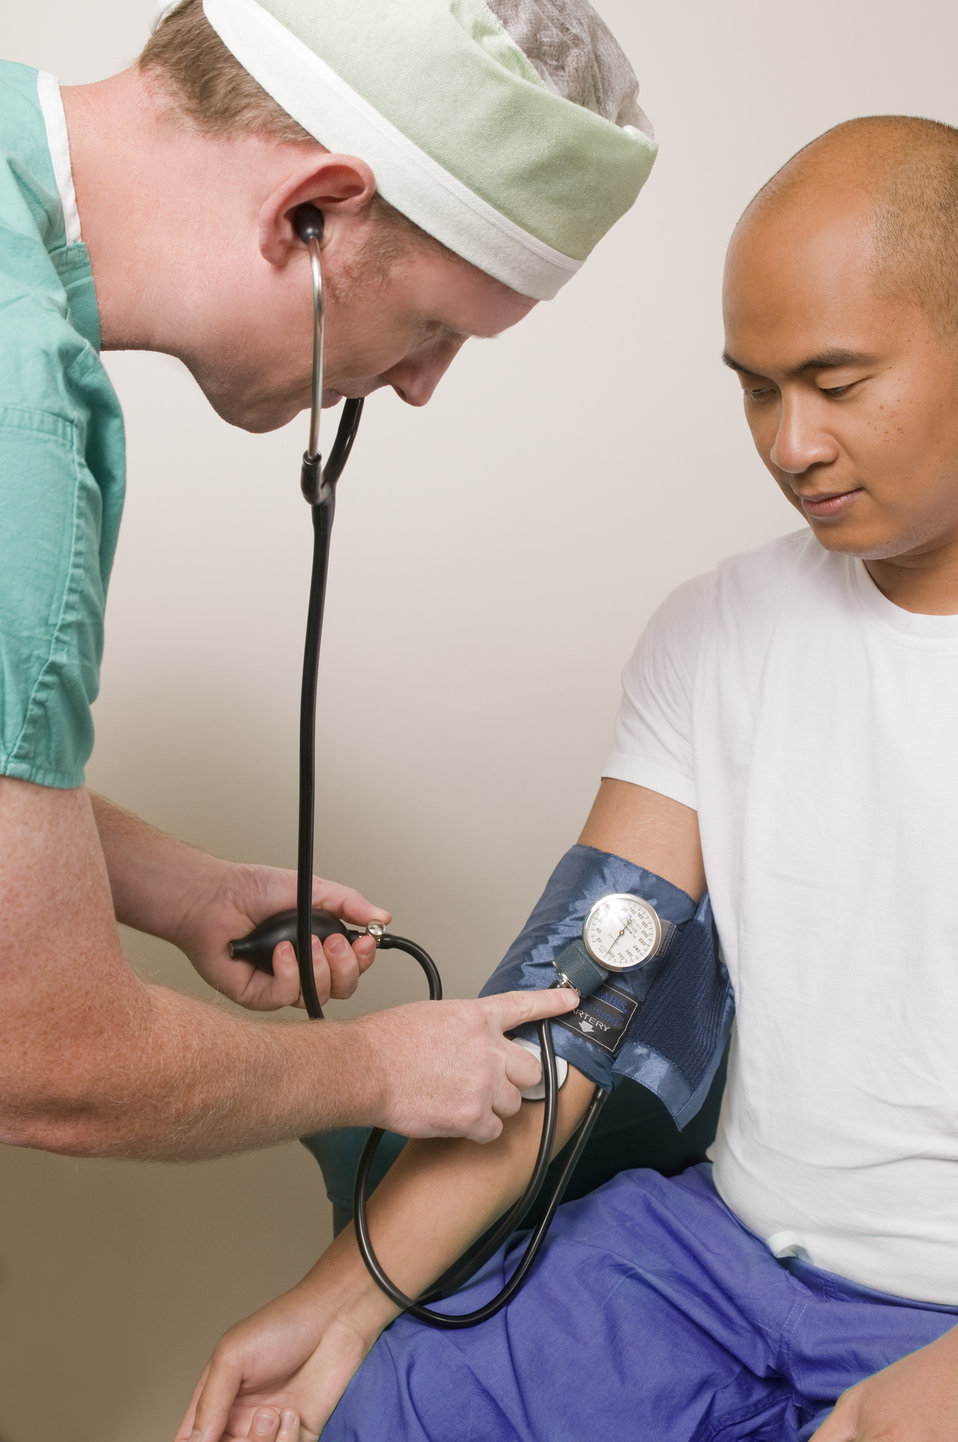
This image depicts a male clinician in the process of conducting a blood pressure examination upon a seated male patient in a clinical setting. The healthcare provider was using a sphygmomanometer, consisting of a pressurized cuff encircling the patient's right upper arm, and a monitor indicating changes in pressure within the cuff, as well as a stethoscope in order to listen for, and record the sounds indicative of the high (systolic), and low (diastolic) pressure values used to measure a patient's blood pressure.